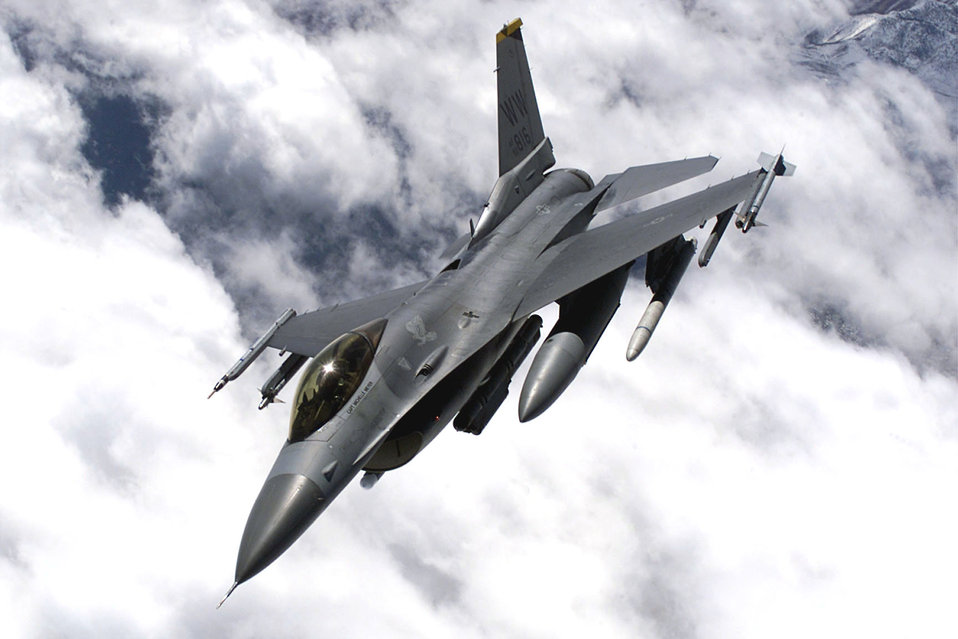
Red Flag 01-03 Falcon

NELLIS AIR FORCE BASE, Nev. -- An F-16 from the 13th Fighter Squadron, Misawa Air Base, Japan banks over Nellis AFB's expansive range. The aircraft is a participant of Red Flag 01-03.